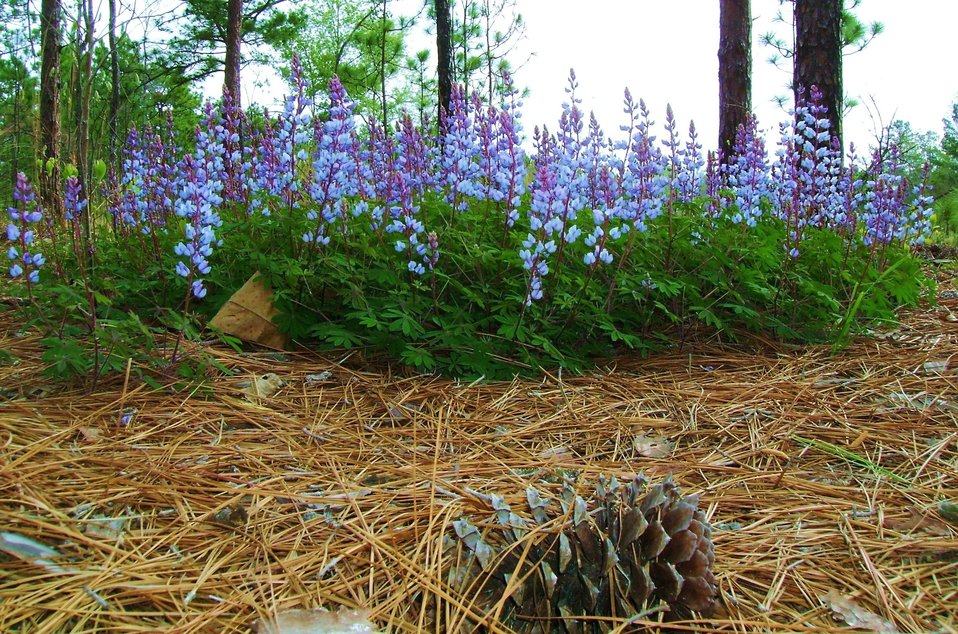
SC-sundial lupine at Carolina Sandhills National Wildlife Refuge